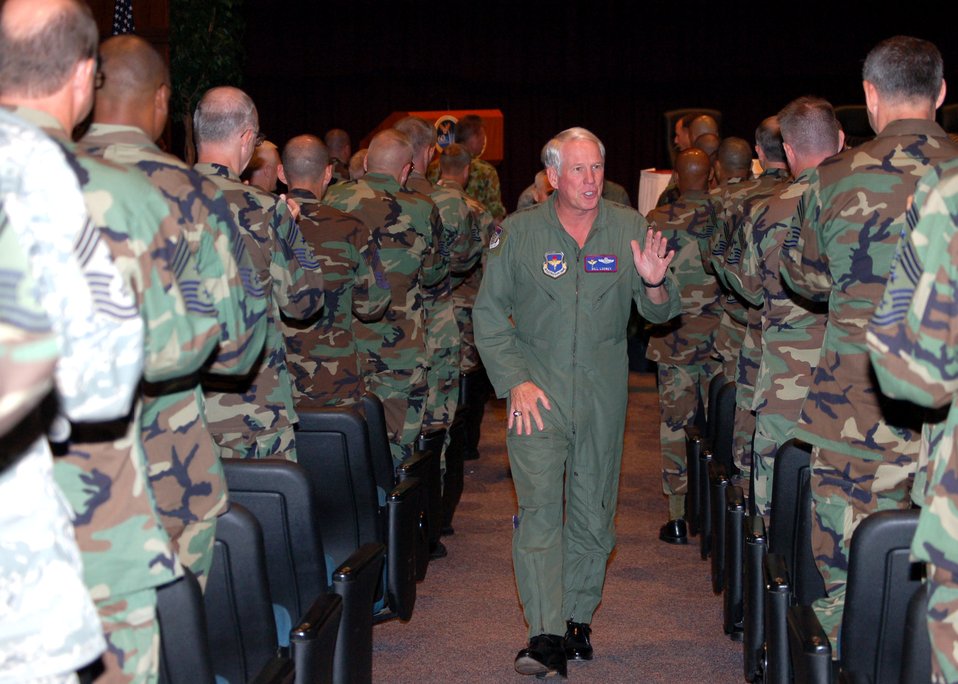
Enlisted leaders gain from summit outcome

Gen. William R. Looney III departs the Air Force Senior NCO Academy Auditorium July 26 after participating in a Major Command Commander's Panel during the Senior Enlisted Leader Conference at Maxwell Air Force Base's Gunter Annex, Ala. General Looney is the Air Education and Training Command commander.